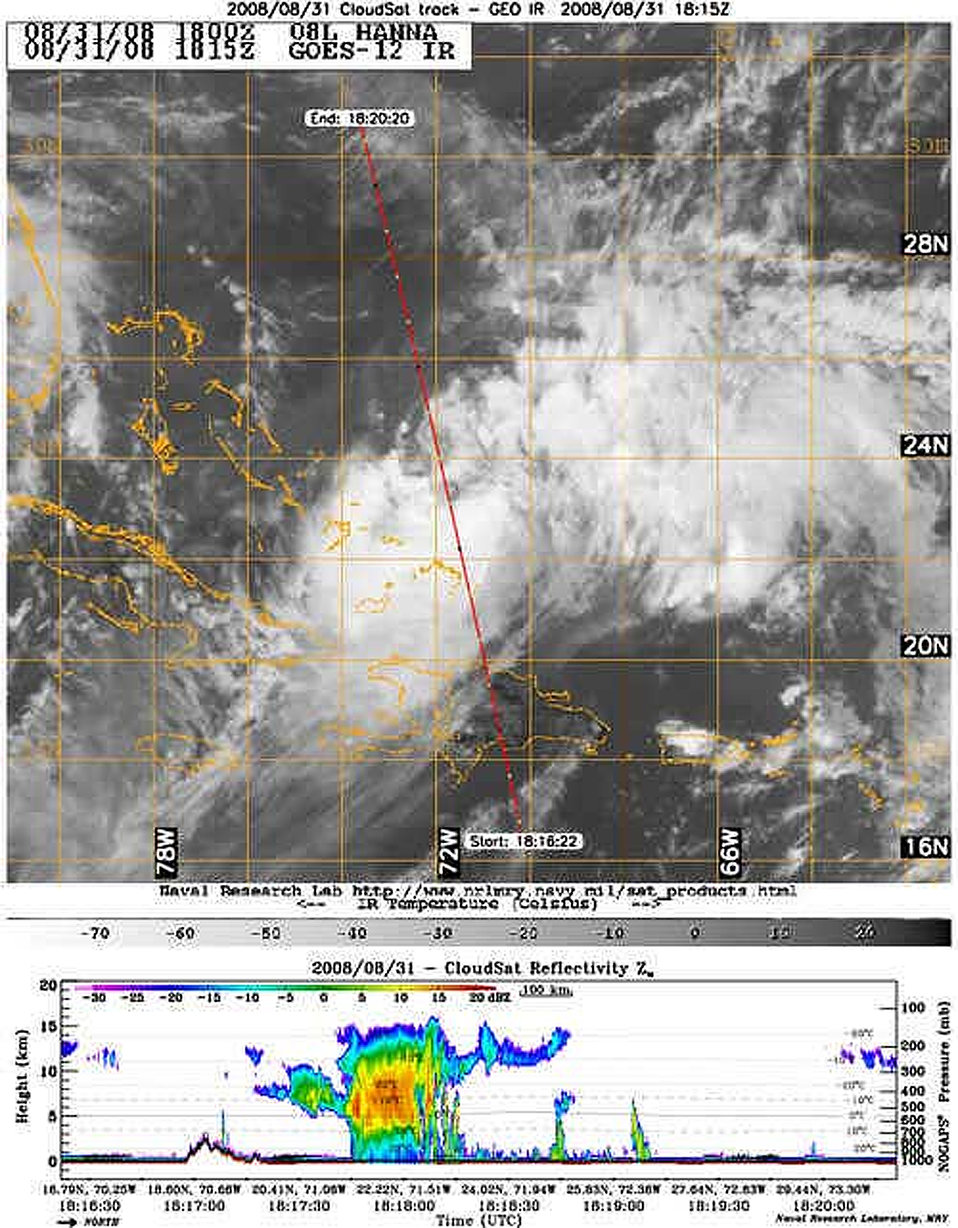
CloudSat Looks at Hanna Sliced in Half: